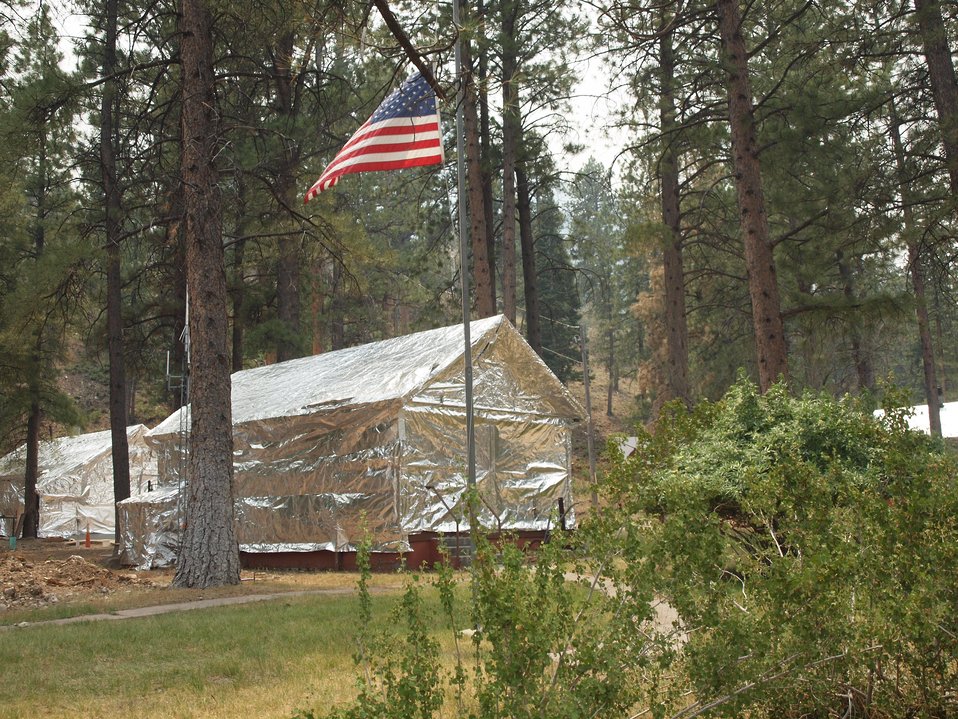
The Kyle Canyon Visitors Center is wrapped in Aluminized Structure Wrap (cabin wrap) to protect the building from radiant heat and burning embers from the Carpenter Fire. It’s the best protection strategy when it's too dangerous to stay. The Carpenter Fire in the Toiyabe National Forest near Humboldt, NV was caused by a lightning strike on Jul. 1, 2013. The fire has consumed nearly 27,881acres and is presently 70% contained.